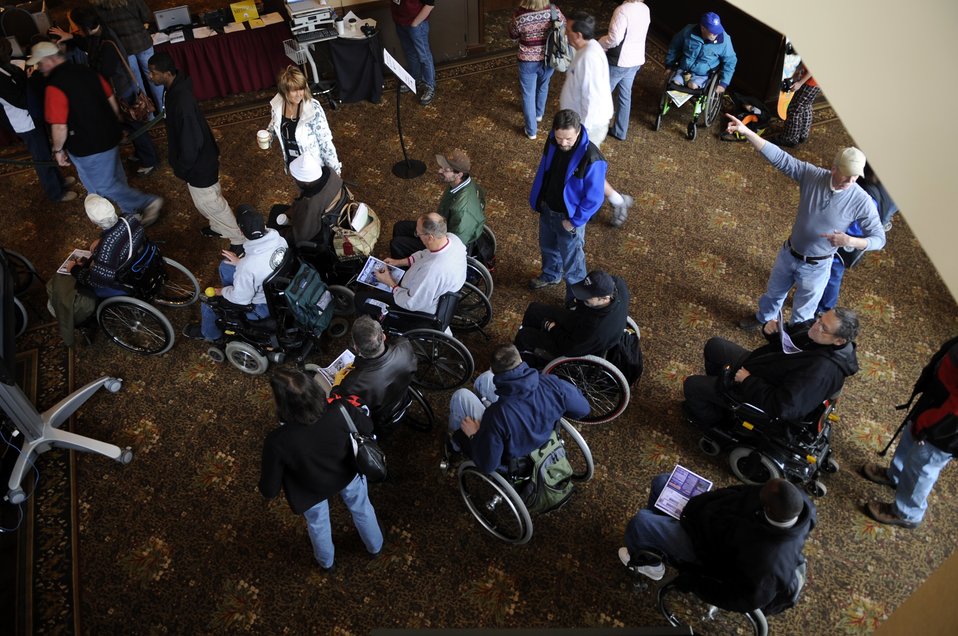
Winter rehabilitation clinic shows veterans potential

Participants line up inside The Silver Tree Hotel March 29 to register for the 23rd National Disabled American Veterans Winter Sports Clinic in Snowmass Village, Colo. The event is sponsored by The Department of Veterans Affairs and Disabled American Veterans.